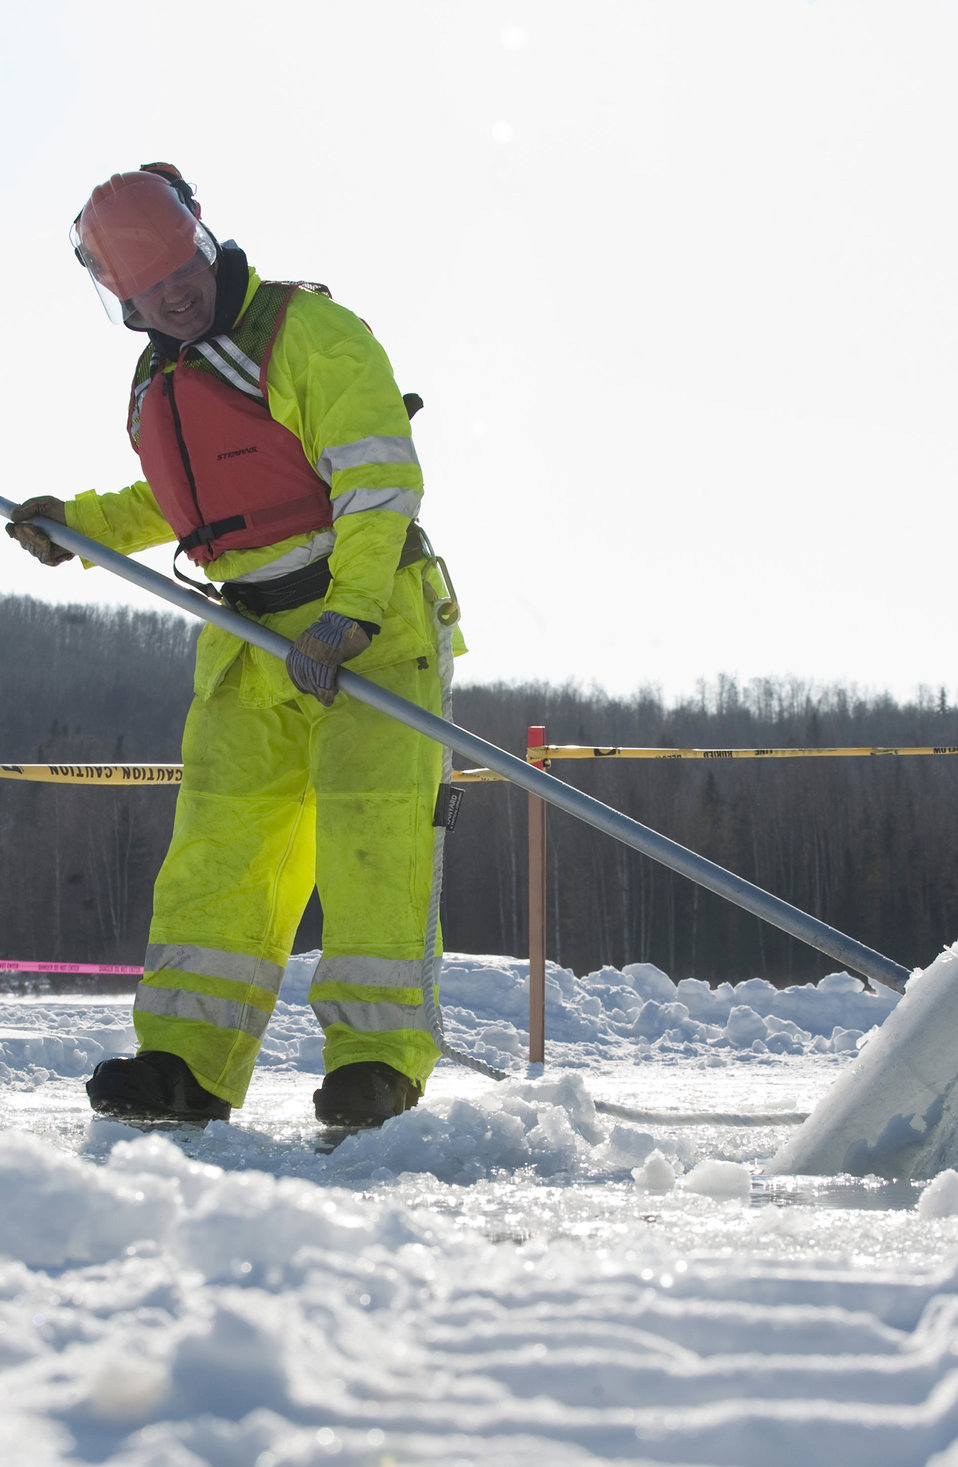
Annual ice ops test emergency response for spill clean-up

Tech. Sgt. Andrew Perrin adjusts a block of ice bobbing in the water during the annual Ice Operations Exercise March 1, 2010, at Joint Base Elmendorf-Richardson?s Six-Mile Lake.